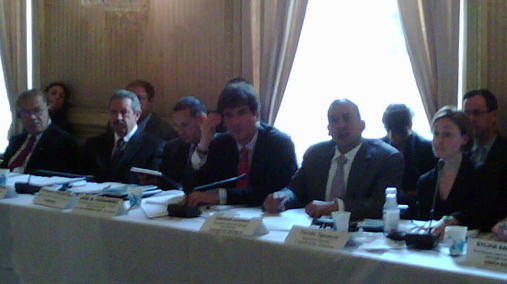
Assistant Secretary Fernandez Participates in the U.S.-Central America Renewable Energy Forum III

Assistant Secretary of State for Economic, Energy and Business Affairs Jose Fernandez participates in the U.S.-Central America Renewable Energy Forum III in New York, New York, on June 20, 2011. Also pictured in the photo are Dr. Enrique Ramirez, President of the National Energy Commission of the Dominican Republic, sitting to the left of Assistant Secretary Fernandez; and Rigoberto Cuellar, Minister of Natural Resources and Environment, Honduras, sitting to the right of Assistant Secretary Fernandez.